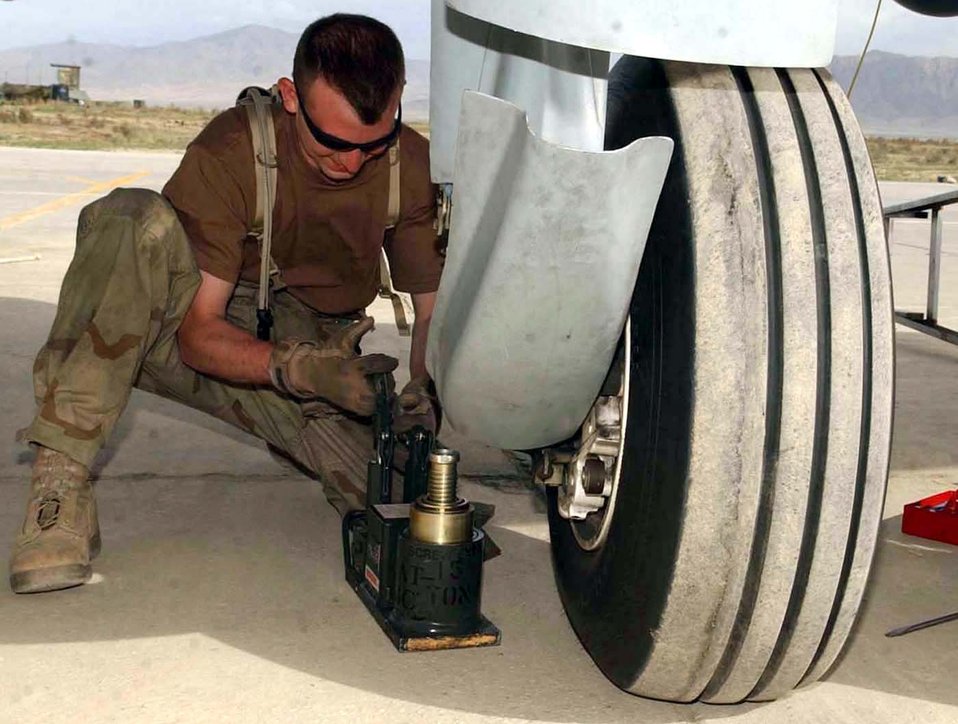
Power lifting

BAGRAM AIR BASE, Afghanistan -- Staff Sgt. Eric Lundberg uses a jack to lift an A-10 Thunderbolt II so he can change its main landing gear brake. Sergeant Lundberg is a crew chief with the 455th Expeditionary Aircraft Maintenance Squadron.